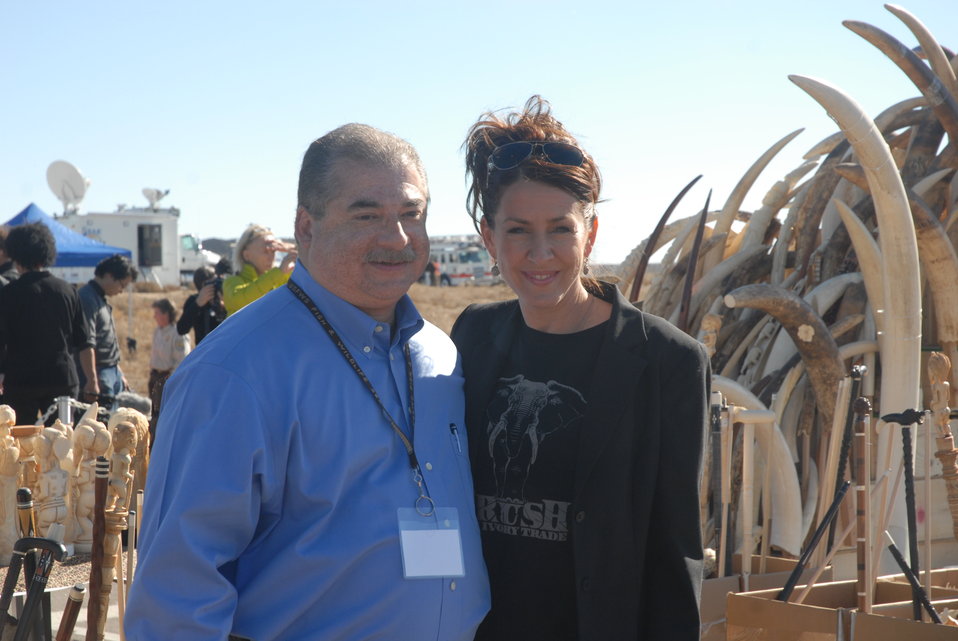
Joely Fisher, actress and IFAW Ambassador, poses with Bryan Arroyo, Assistant Director for the U.S. Fish and Wildlife Service International Affairs program, at the U.S. Ivory Crush.